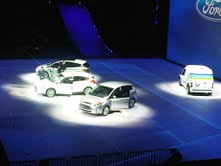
The 2011 Detroit Auto Show